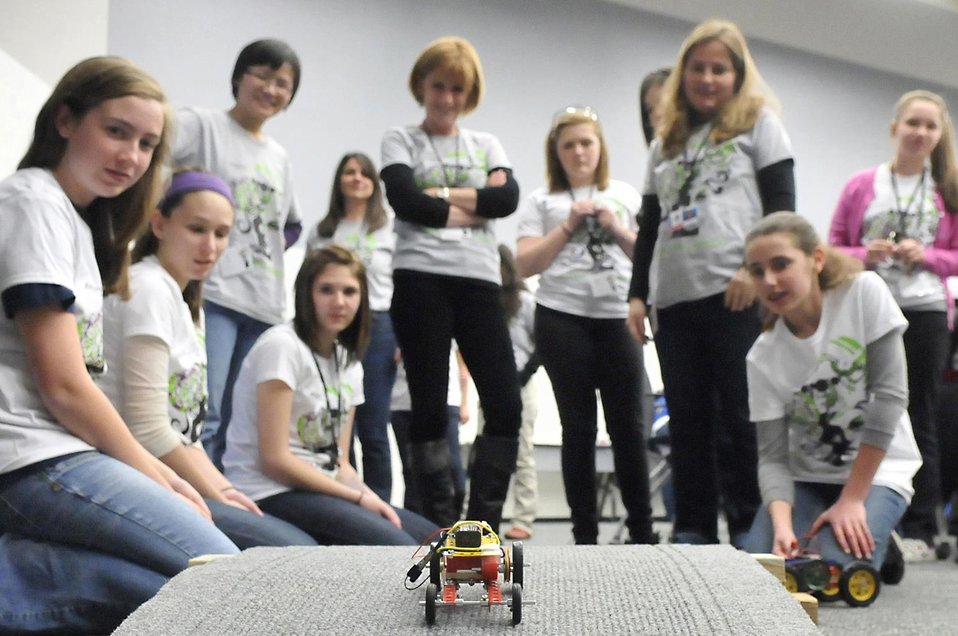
Photo of the Week: Women in STEM Introducing Girls to Engineering

This Friday, March 8, marks International Women's Day, and the recognition of women's achievements all over the world. At the Energy Department and each of the National Laboratories, some of the nation's top women scientists and engineers attend events to urge girls to open their minds to careers in science, technology, engineering and math (STEM).

In this February 2012 photo, a group of eighth grade girls were invited to Argonne National Laboratory to participate in events during the annual Introduce a Girl to Engineering Day. Division director Amanda Petford-Long and other Argonne mentors are pictured observing a trial run of race cars built by the eighth grade students.